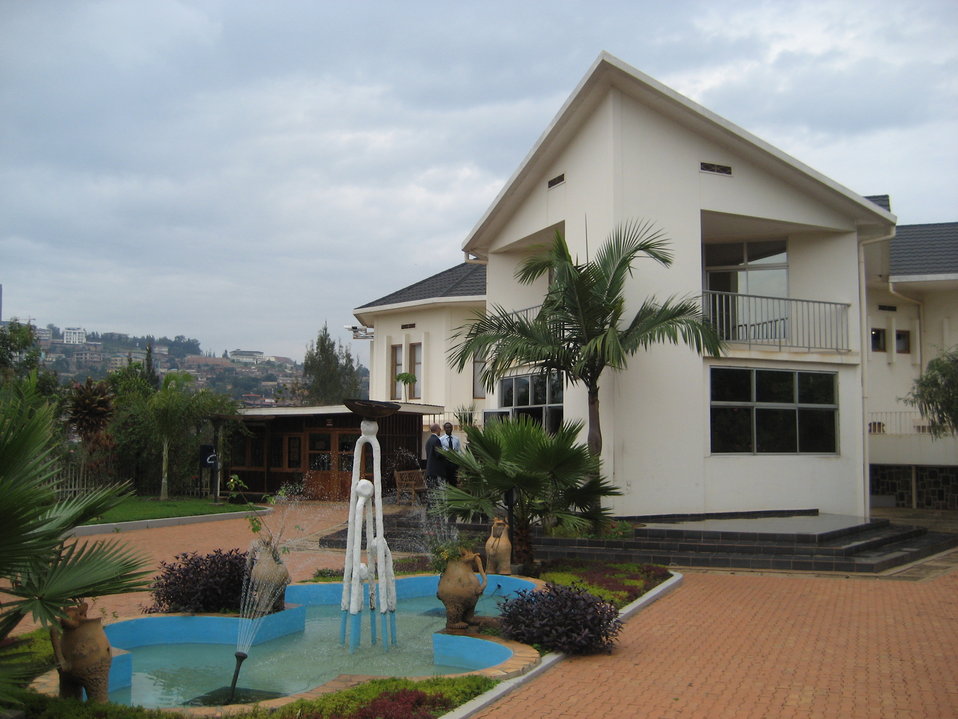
Deputy Secretary Neal Wolin’s trip to Africa 2009

On Saturday, October 31, Deputy Secretary Wolin visited the Kigali Memorial Centre, a permanent memorial to those who fell victim to the Rwandan genocide.